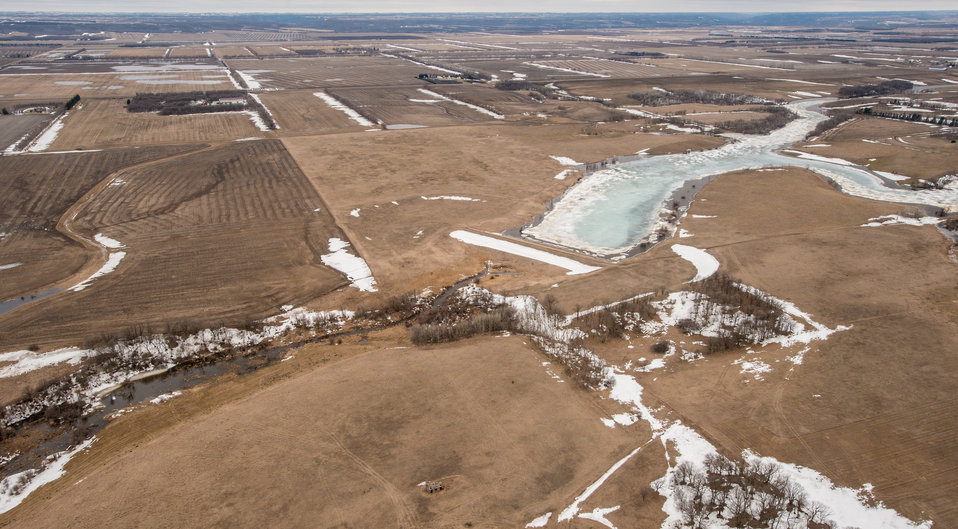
Tongue River Watershed dam T-2-2, Weiler Dam, in Pembina County, ND, part of the Red River basin, on Wednesday, May 1, 2013. To learn about the Red River Basin Initiative, see www.mn.nrcs.usda.gov/news/features13/RRBI.html.